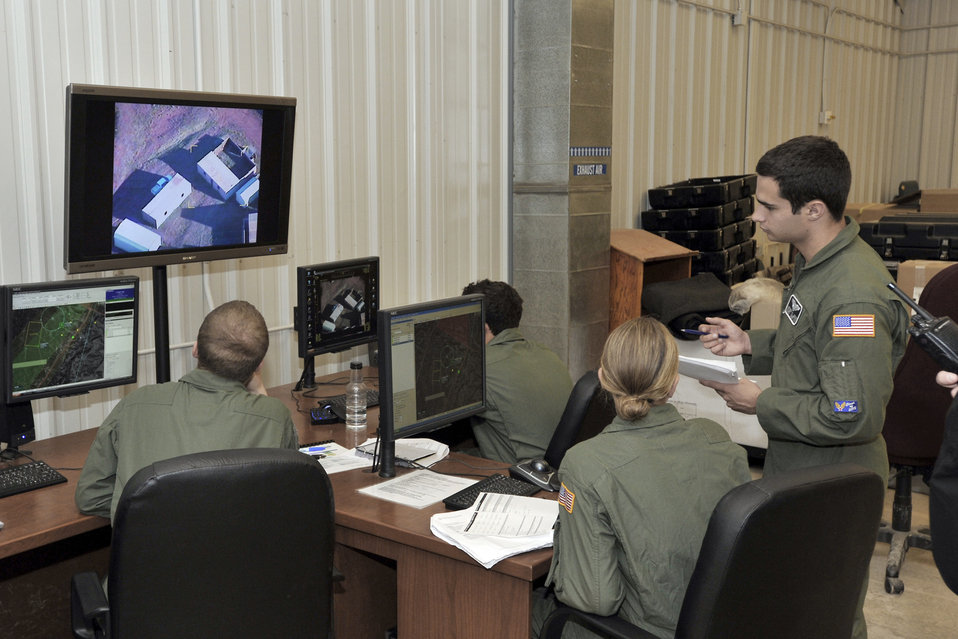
Scan Eagle

Air Force Academy cadets control the flight of a Scan Eagle, a remotely piloted aircraft, over a